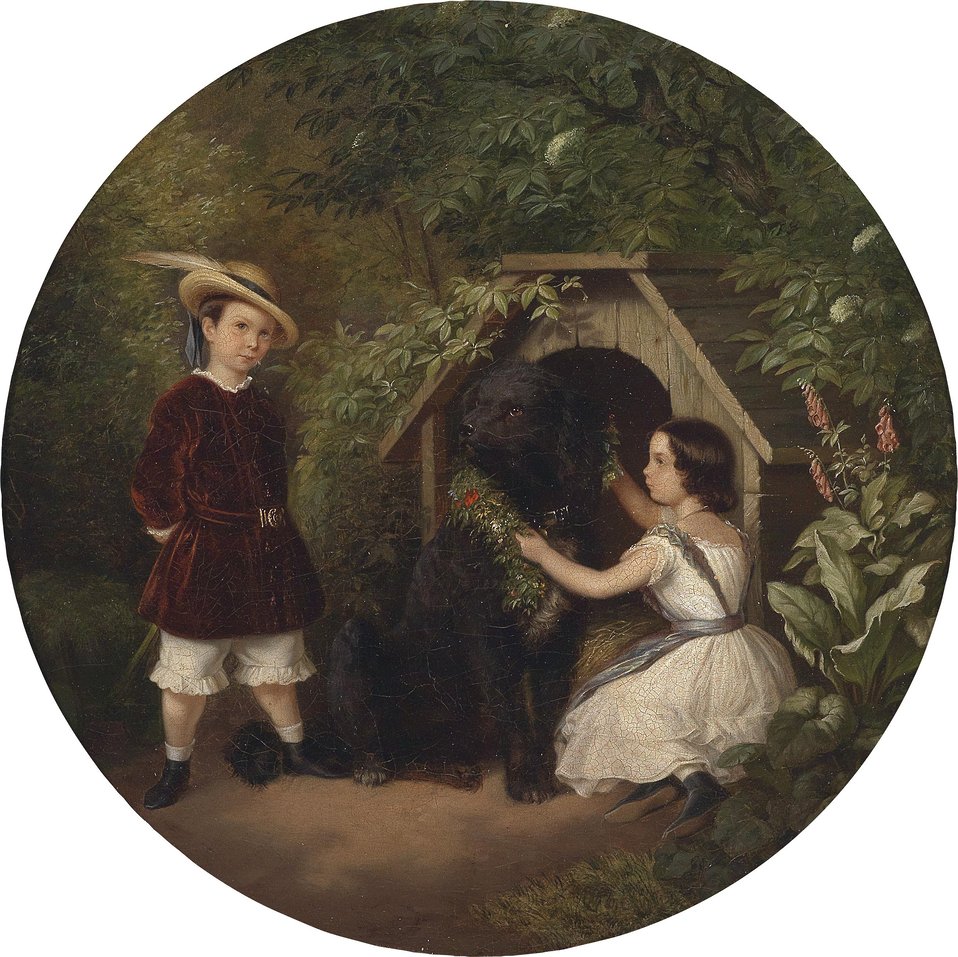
Deutsch: Bildnis Felix (1849-1909) und Doris (geb. 1848) Seidel mit ihrem treuen Gefährten, Öl auf Leinwand, 30,5 x 30,5 cm. Laut Auktionshaus aus dem Umkreis des Julius Friedrich Ludwig Runge (1843-1922).